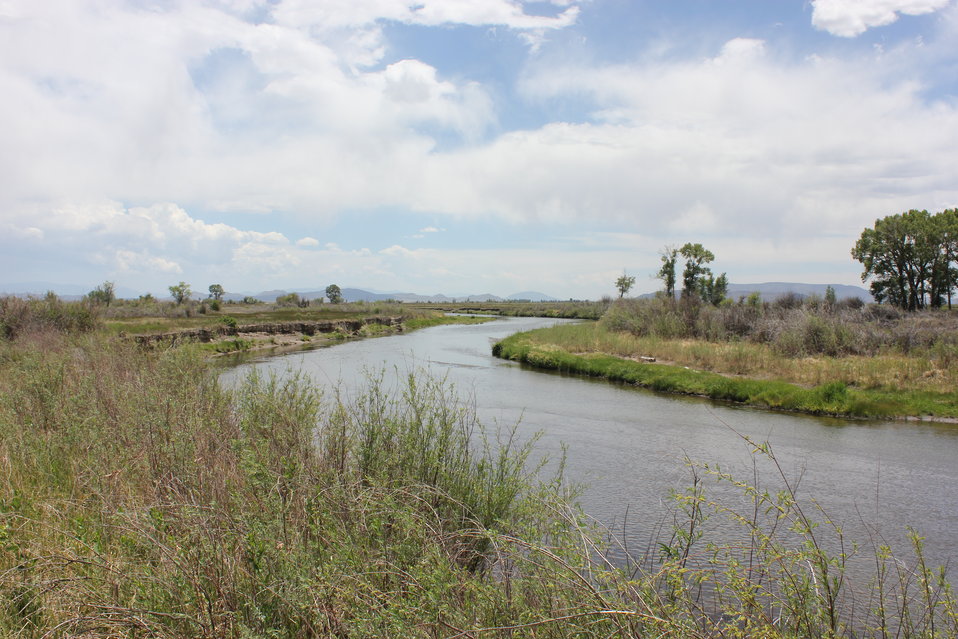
Rio Grande River